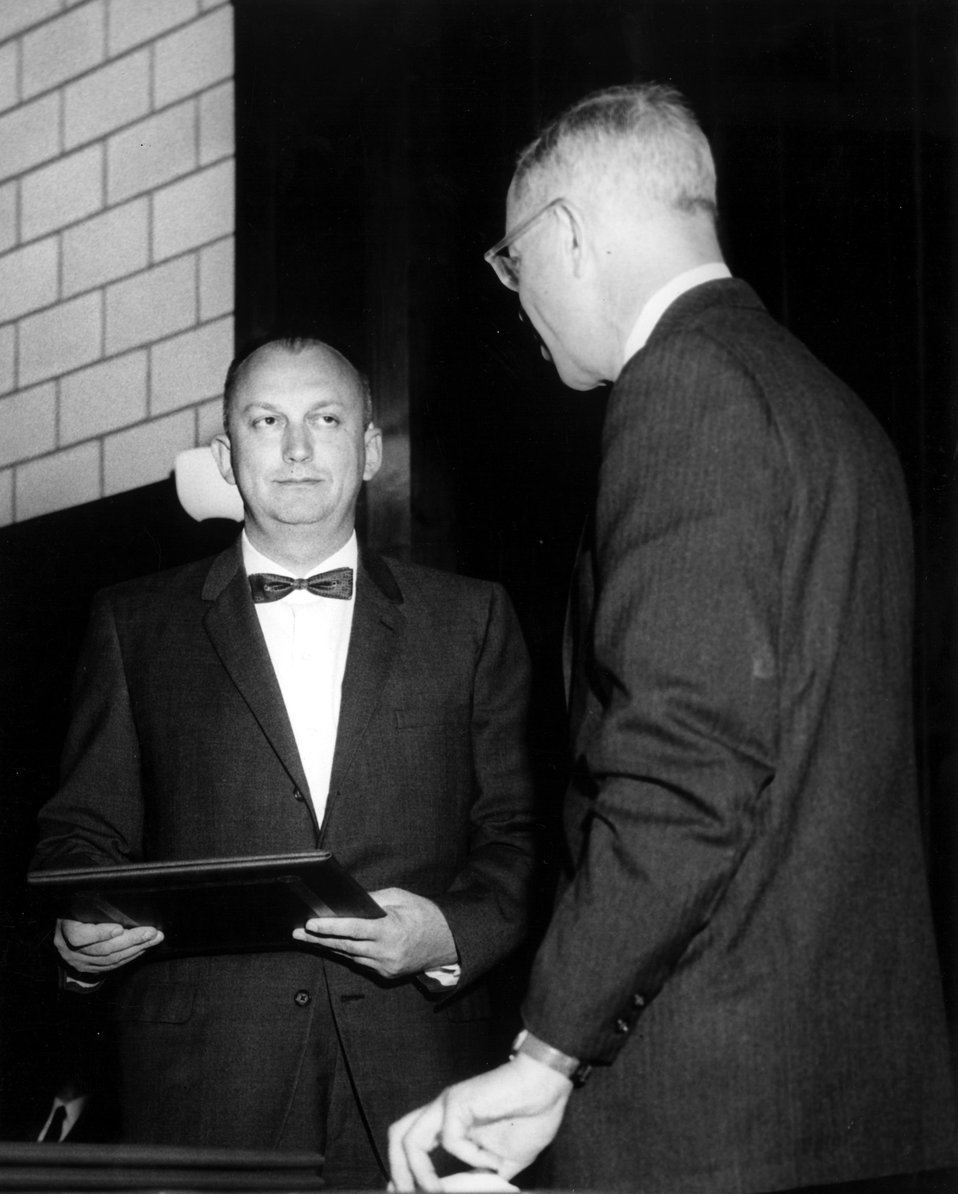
Dr. Benedict, GAC and Dr. Tobias. ERNEST O. LAWRENCE AWARD - 1963. National Academy of Sciences, April 25, 1963.